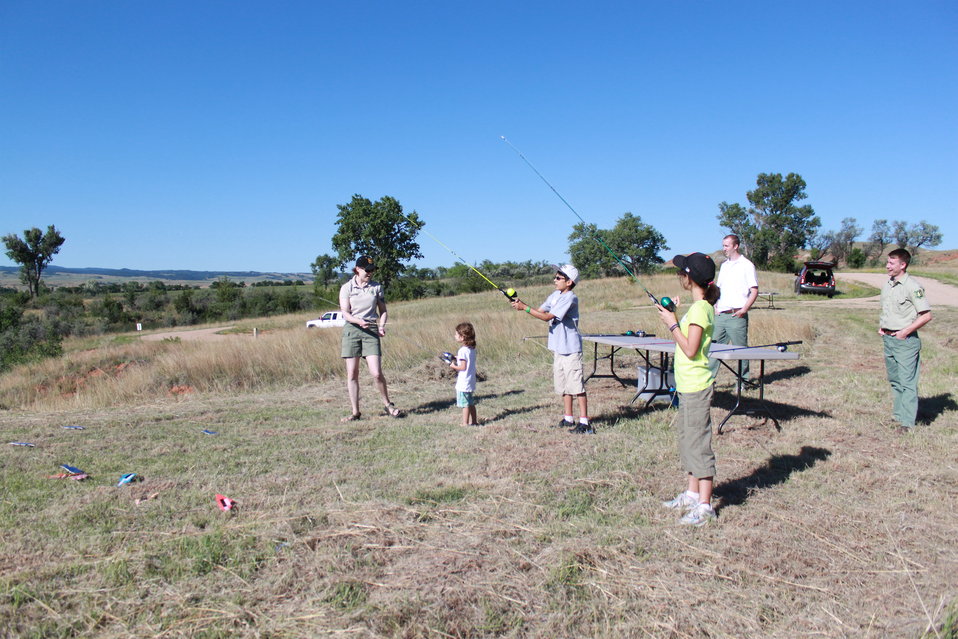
Family Fishing Fun

Founder of the U.S. Forest Service, Gifford Pinchot, in his 1939 book 'Fishing Talk' encouraged his readers to always, 'take the youngster along.' Toward that end, Black Hills National Forest staffers teach casting to a group of kids at a National Fishing and Boating Week event at Mirror Lake, near Spearfish, South Dakota. The event was co-sponsored by the D.C. Booth Historic National Fish Hatchery & Archives.